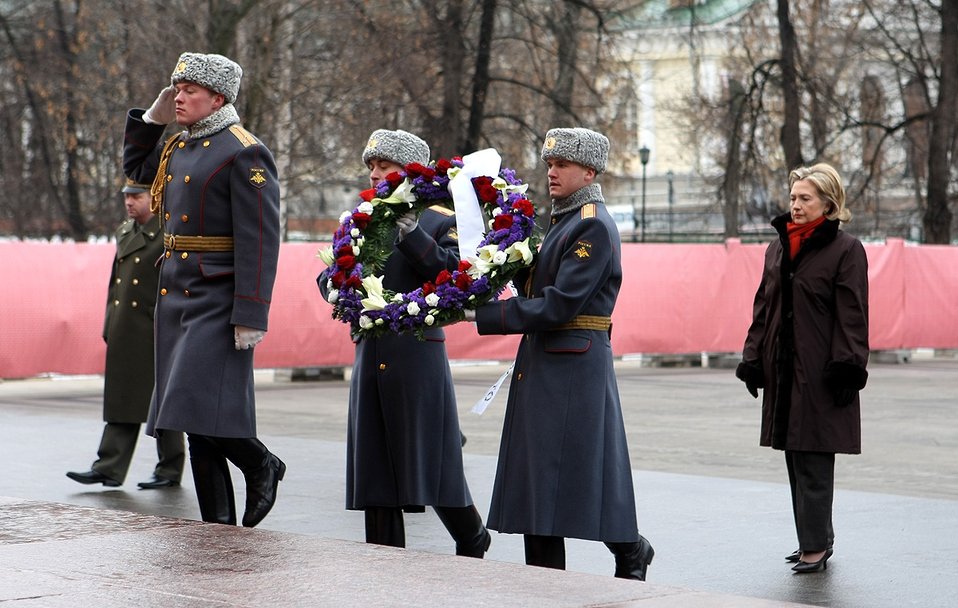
Secretary Clinton Lays a Wreath

U.S. Secretary of State Hillary Rodham Clinton lays a wreath at Russia's Tomb of the Unknown Soldier in Moscow, March 19, 2010.